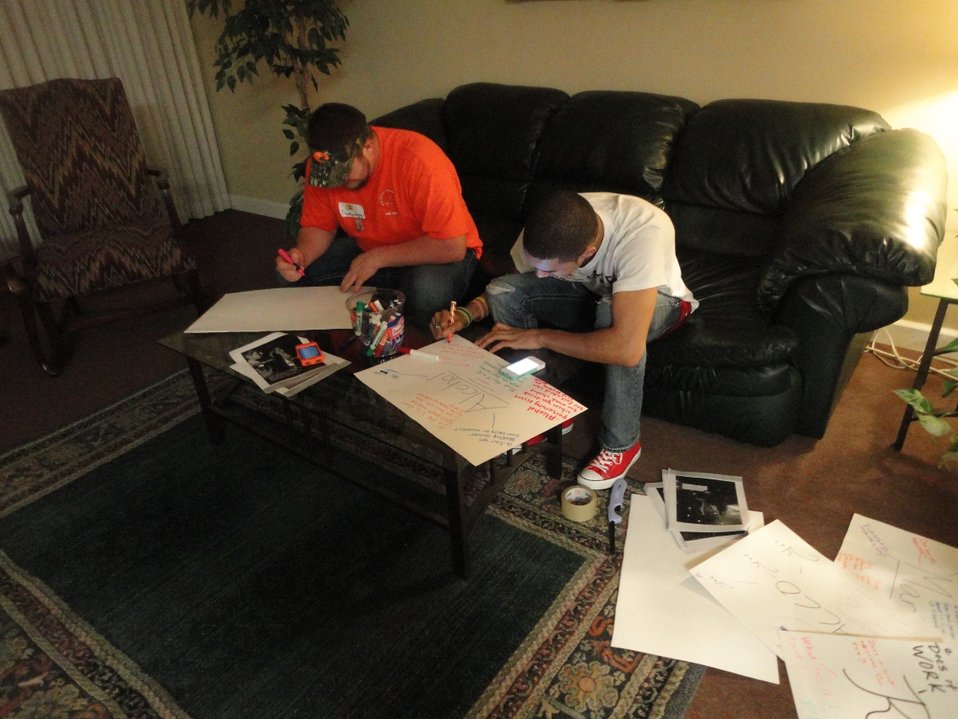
DREAM's, MS Student Advisory Board of Youth Highway Safety NDFW 2013

Mississippi High School Students participate in NDFW 2013 events.